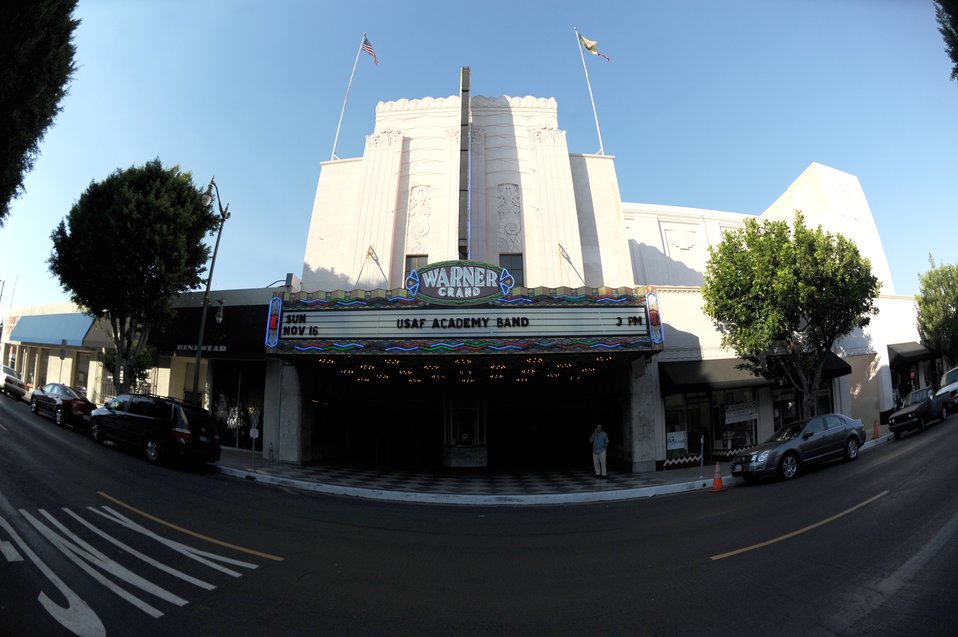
Band of the Golden West

Members of the Band of the Golden West perform at the Warner Grand Theatre, San Pedro, Calif., Nov. 16. The band is performing during Air Force Week Los Angeles, an event designed to educate the local population about the Air Force's capabilities and missions through various activities and exhibitions in the Los Angeles area. It provides an up close and personal look at the men and women of the Air Force serving worldwide in the defense of freedom. Air Force Week Los Angeles runs from Nov. 14-21.